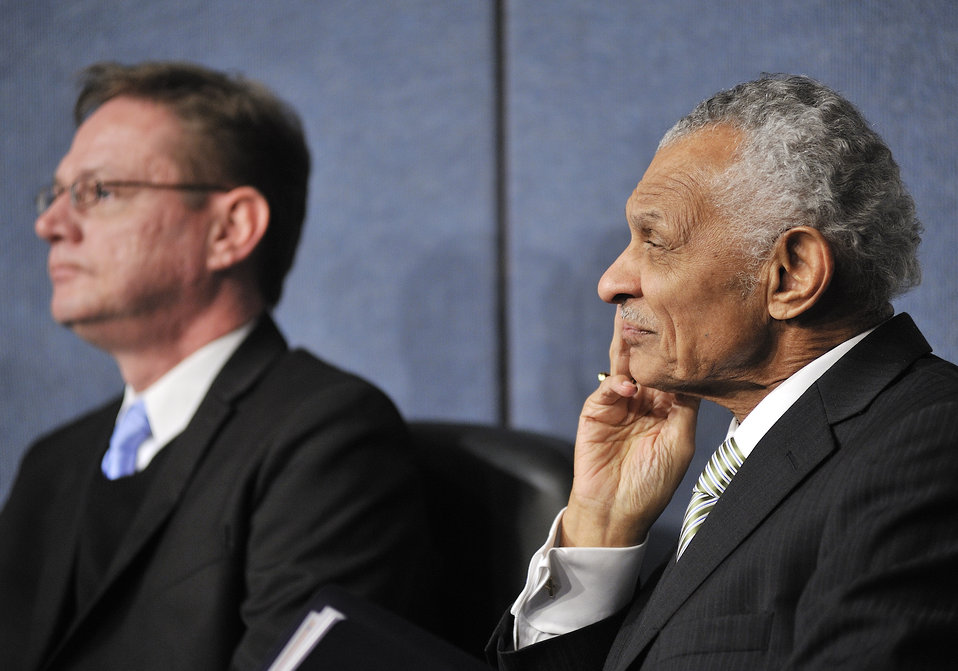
Martin Luther King Jr. Day Celebration at DOE headquarters.